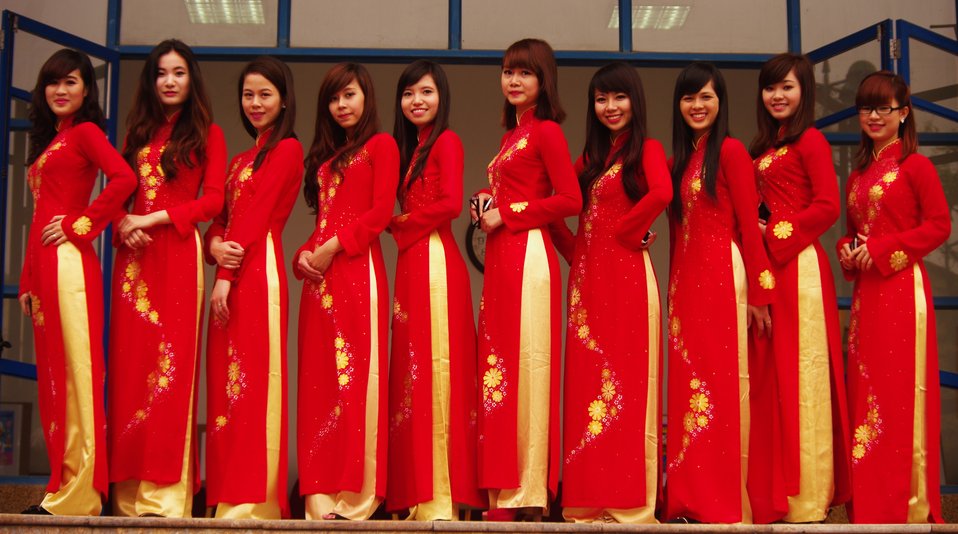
Performers at the World TB Day Event in Hanoi

March 23, 2013